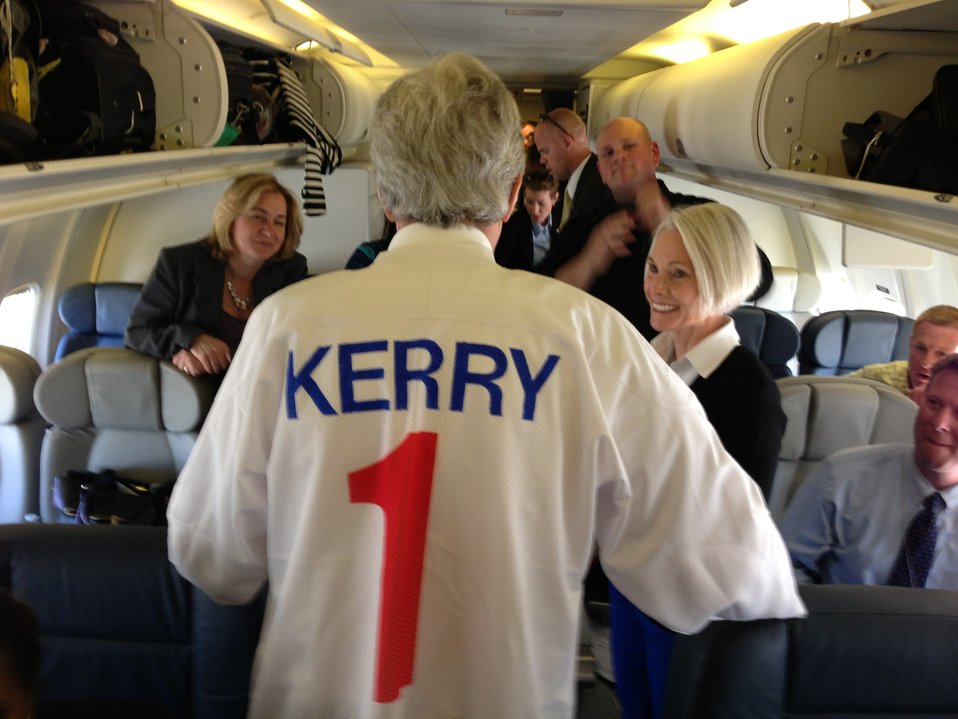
Secretary Kerry Speaks With Reporters En Route to Rome

U.S. Secretary of State John Kerry models a hockey jersey given to him by the pickup hockey team at the U.S. Embassy in Moscow, Russia, as he speaks to reporters aboard his plane before a flight from Russia to Rome, Italy, on May 8, 2013.